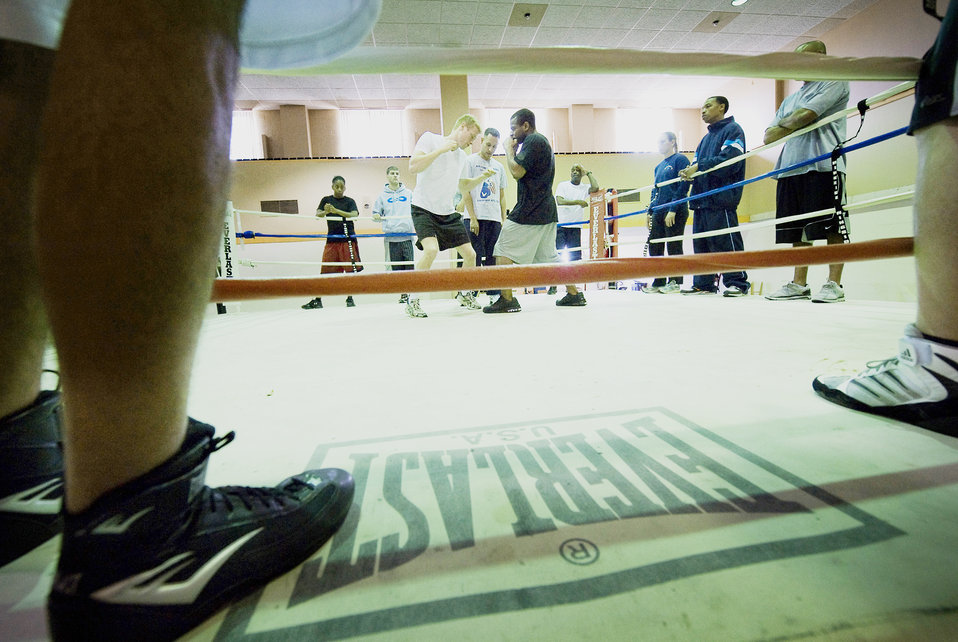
Airmen work toward boxing championships

Air Force boxing team hopefuls Jarrett Johnson and James Beck work on delivering body blows while boxing coach Steven Franco oversees the servicewide camp March 23, 2010, at Lackland Air Force Base, Texas.